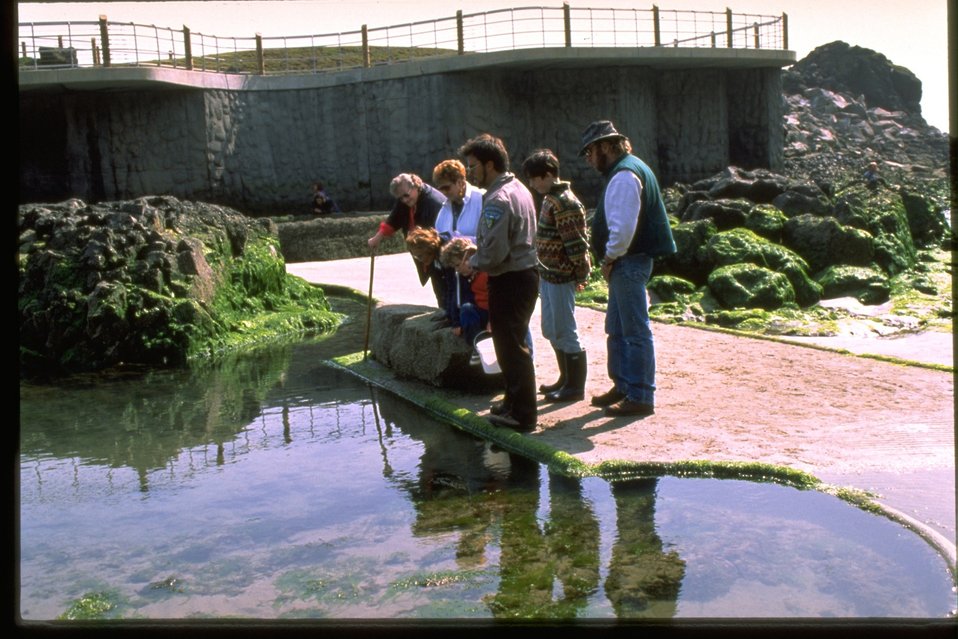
Programs at Yaquina Head Outstanding National Area accessible tidepools.